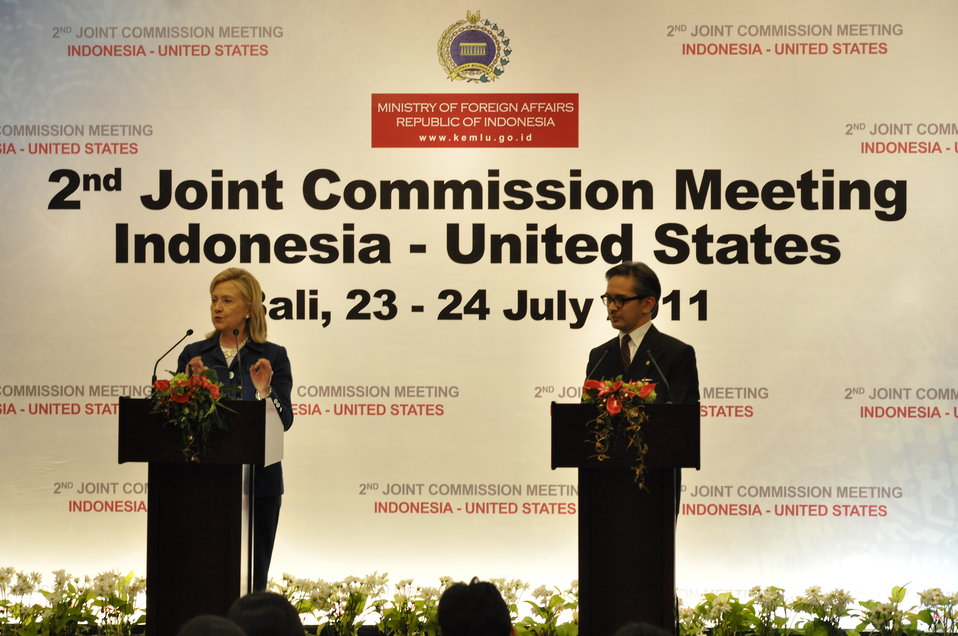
Secretary Clinton and Indonesian Foreign Minister Natalegawa Address Reporters

U.S. Secretary of State Hillary Rodham Clinton and Indonesian Foreign Minister Marty Natalegawa address reporters in a joint press conference on the U.S.-Indonesia Joint Commission Meeting in Bali, Indonesia, on July 24, 2011.